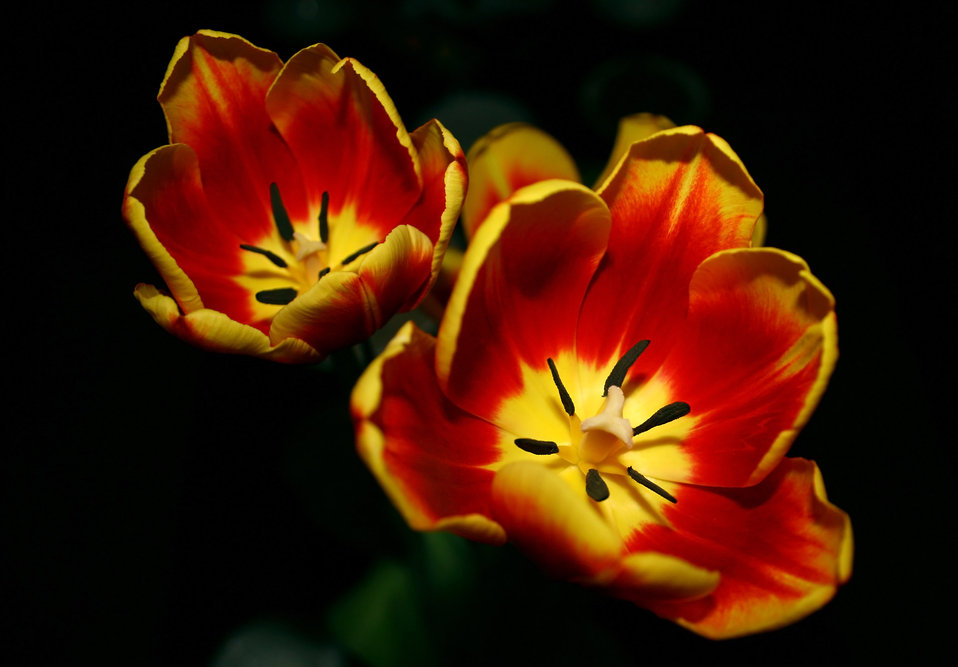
Tulip #4

Tulip flower.